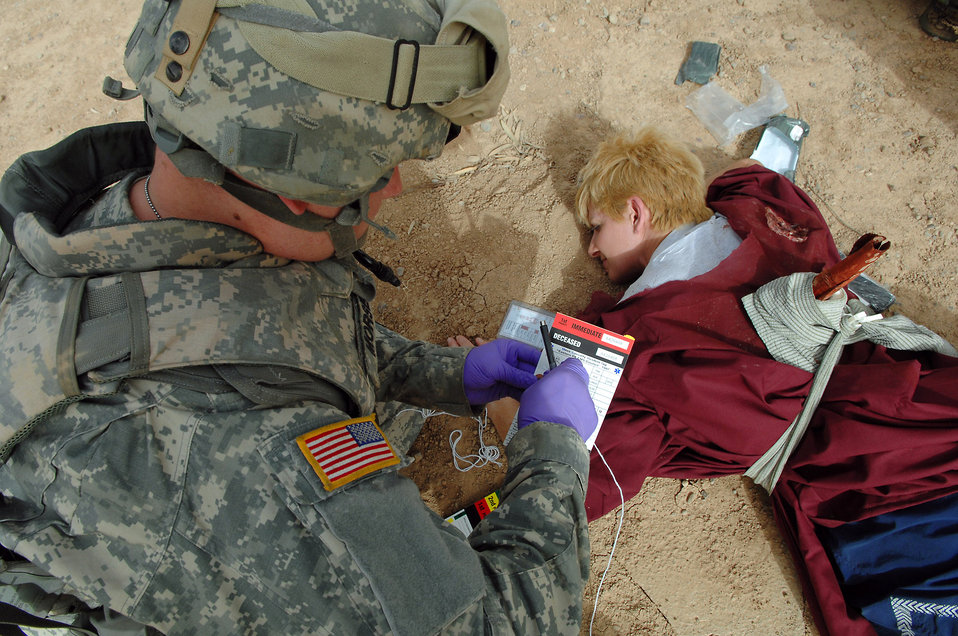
Worst case scenario

An Army emergency responder fills out a medical card used to label a patient's current state during a mass casualty battle drill March 31 at Balad Air Base, Iraq. During the drill, Chief Master Sgt. Kristine Mullaney of the 332nd Expeditionary Mission Support Group Det. 1 Mayor Cell was marked deceased due to extensive simulated wounds. Patient triage is an important part of responding to a mass casualty. Triaging patients involves identifying those whose wounds require immediate or delayed treatment. Chief Mullaney is deployed from the Kentucky Air National Guard.